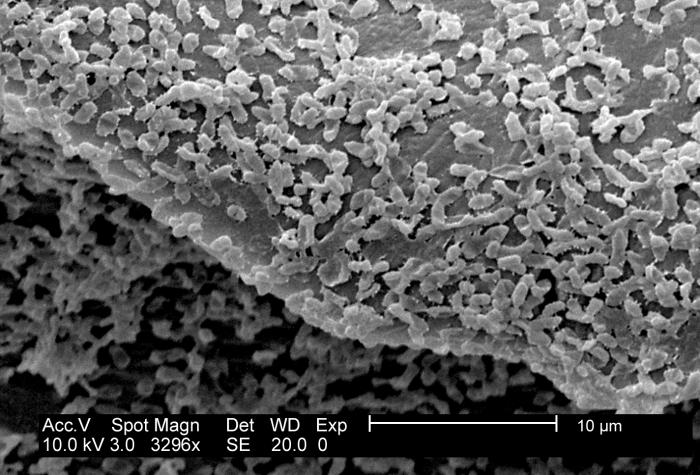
This SEM depicts a P. mirabilis (ATCC 29906) biofilm growing on PC (polycarbonate) coupons using a CDC biofilm reactor.